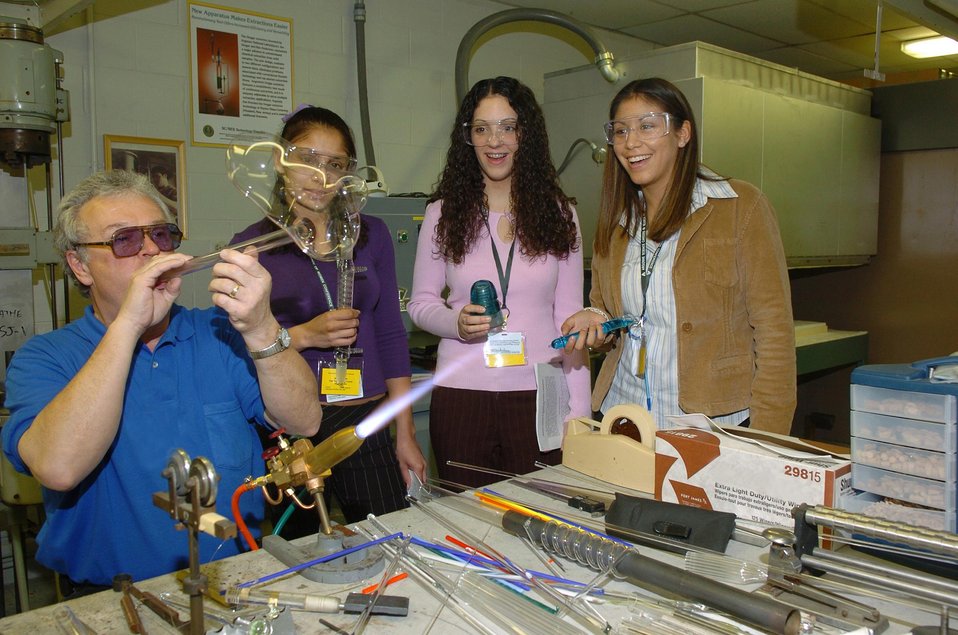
Argonne National Laboratory scientific glassblower demonstrates his specialty to students about fuel cell development at the 2005 Science Careers in Search of Women Conference.

About 350 students from nearly 60 schools throughout the Chicago area will participate in the day-long conference. The goal is to encourage high school women to consider a career in science and technology. Science careers in search of women puts students with scientists in various fields and provides an opportunity to spend the day interacting with positive female role models. Students participate in panel discussions with speakers from various scientific and engineering disciplines. The students also tour several labs at ANL including biology, chemistry, physics, computer science and engineering, as well as visit career booth exhibits.